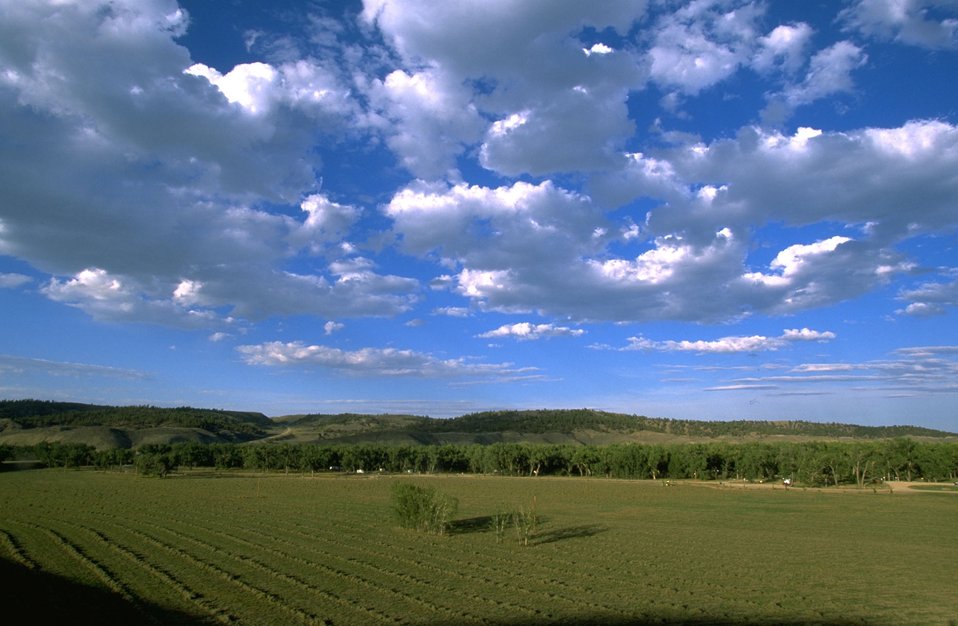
Kipp Recreation Area